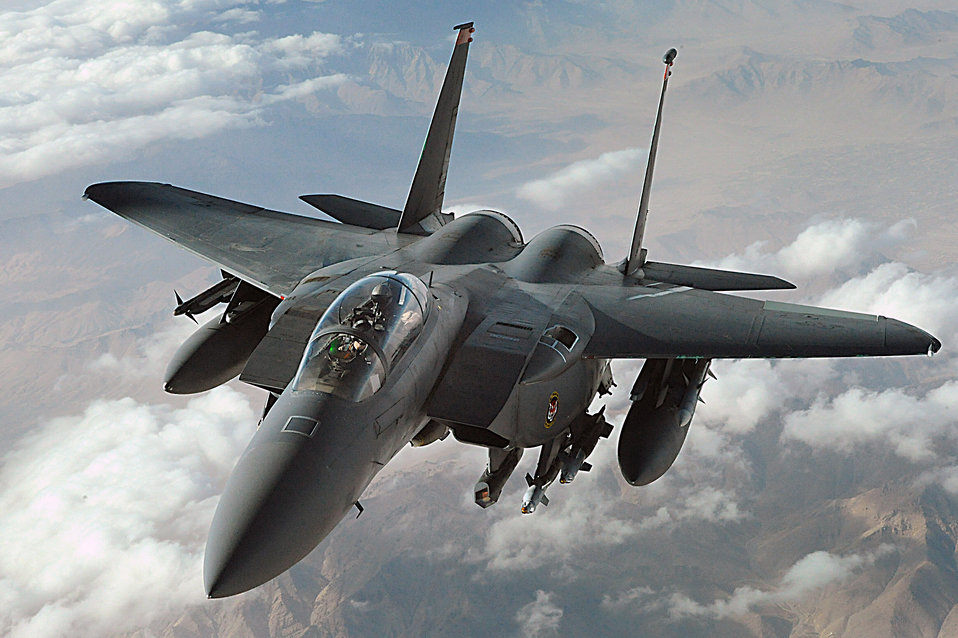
Airpower summary: F-15Es escort convoys

An F-15E Strike Eagle soars over Afghanistan providing close-air support and armed aerial overwatch to deter enemy activities. The Strike Eagle is from the 391st Expeditionary Fighter Squadron, Bagram Airfield, Afghanistan.